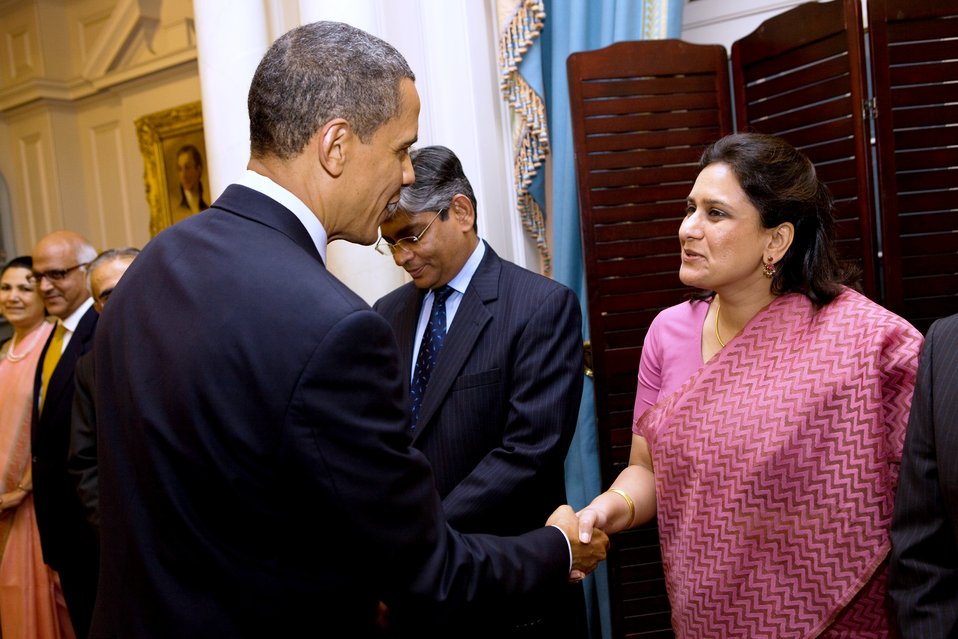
President Obama Shakes Hands With High-Ranking Indian Delegation Member

U.S. President Barack Obama shakes hands with a high-ranking member of the Indian Delegation at the U.S.-India Strategic Dialogue reception at the U.S. Department of State in Washington, D.C., on June 3, 2010.